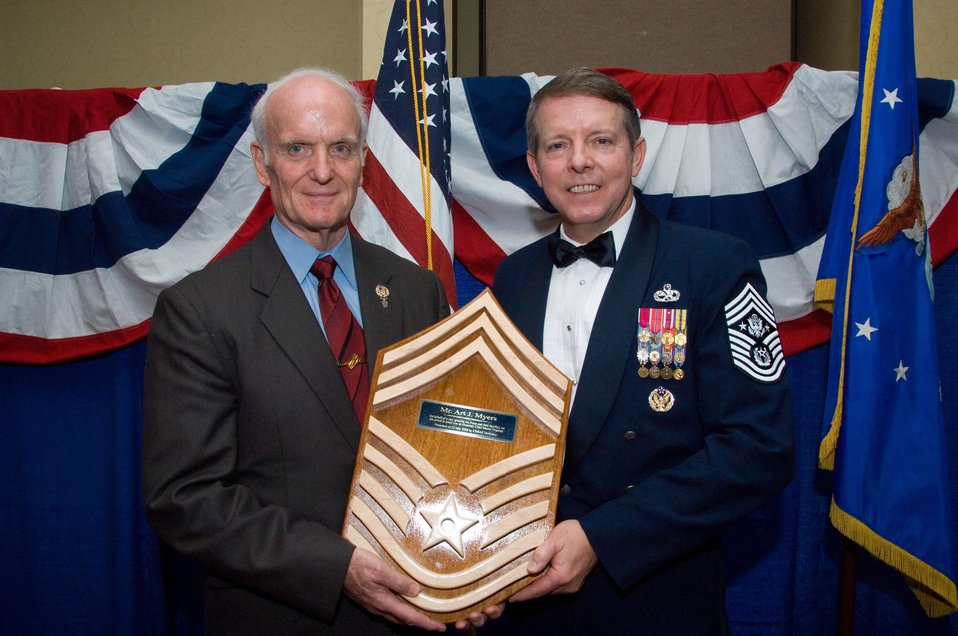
Senior Enlisted Leaders Summit 2008 Enlisted Heritage Dinner

Chief Master Sgt. of the Air Force Rodney J. McKinley presents Arthur J. Myers, director of Air Force Services, with the honorary rank and title of a chief master sergeant in the Air Force during the Enlisted Heritage Dinner May 23 at the Senior Enlisted Leaders Summit in Montgomery, Ala.